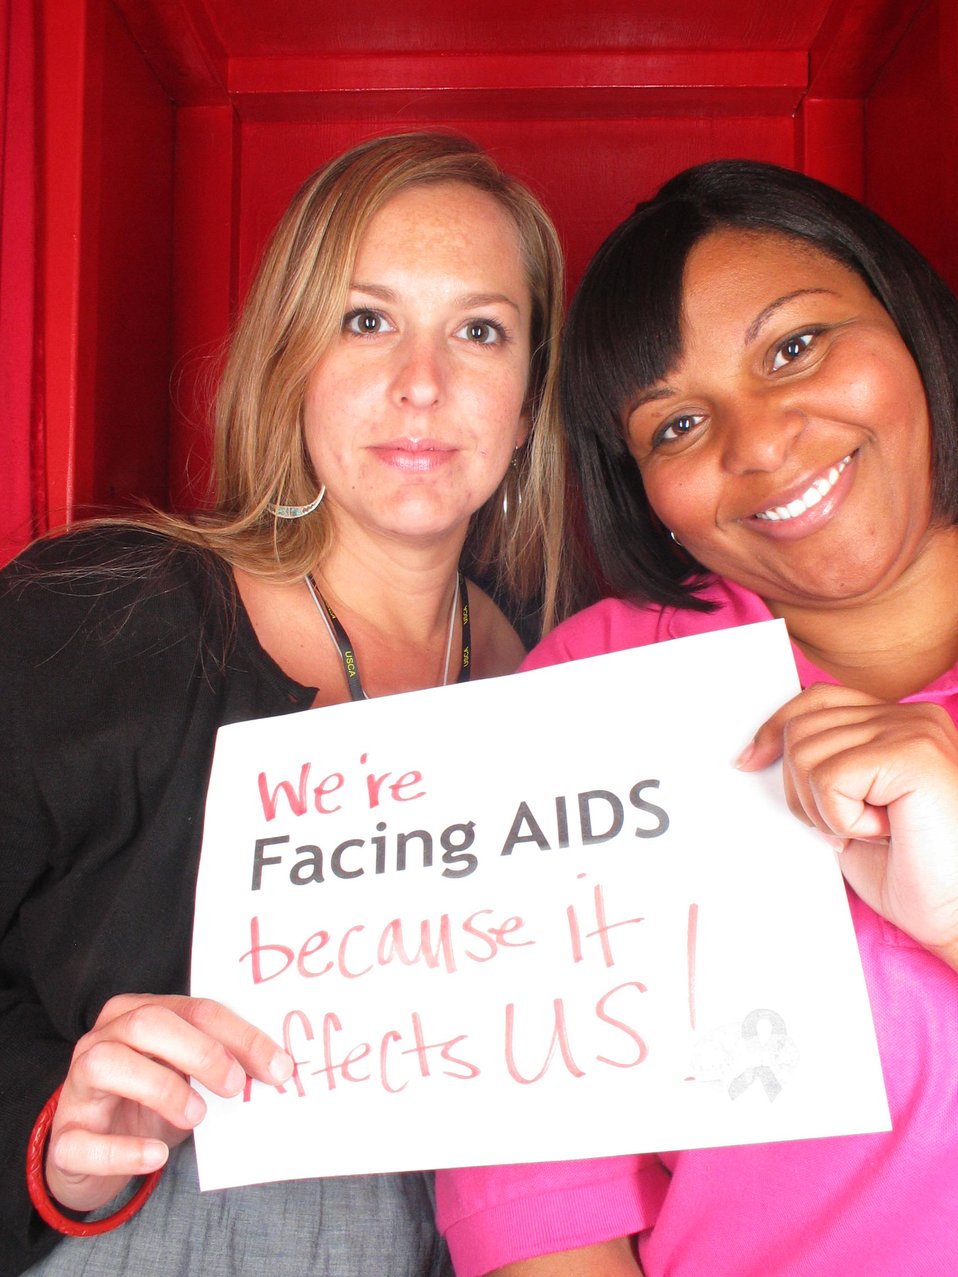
We're Facing AIDS because it affects US!